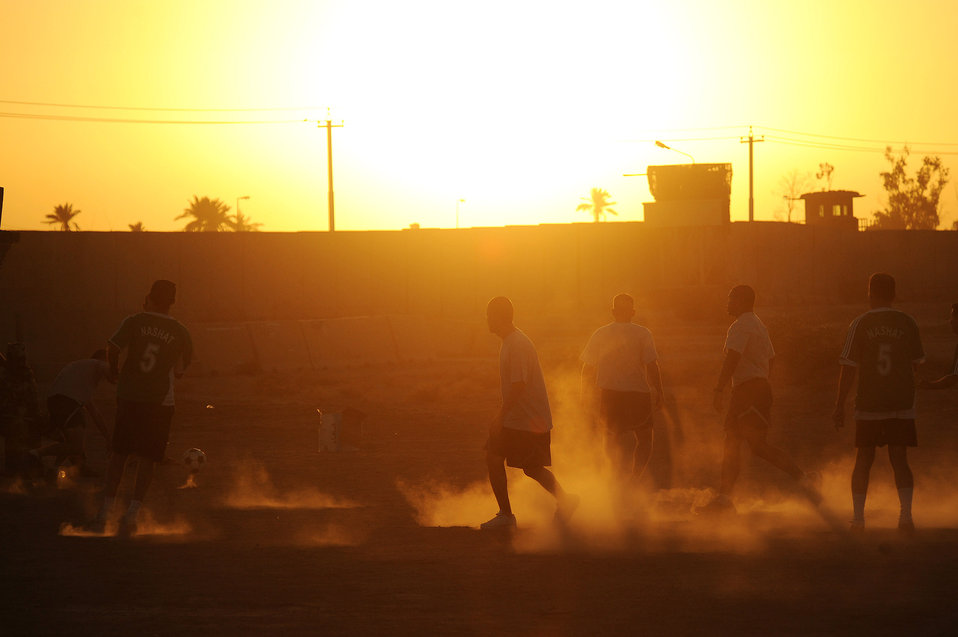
Where's the ball?

U.S. Air Force and Iraqi air force members compete against each other June 20 in a friendly soccer match at New Al Muthana Air Base, Iraq. The match was hosted by the Coalition Air Force Training Team.